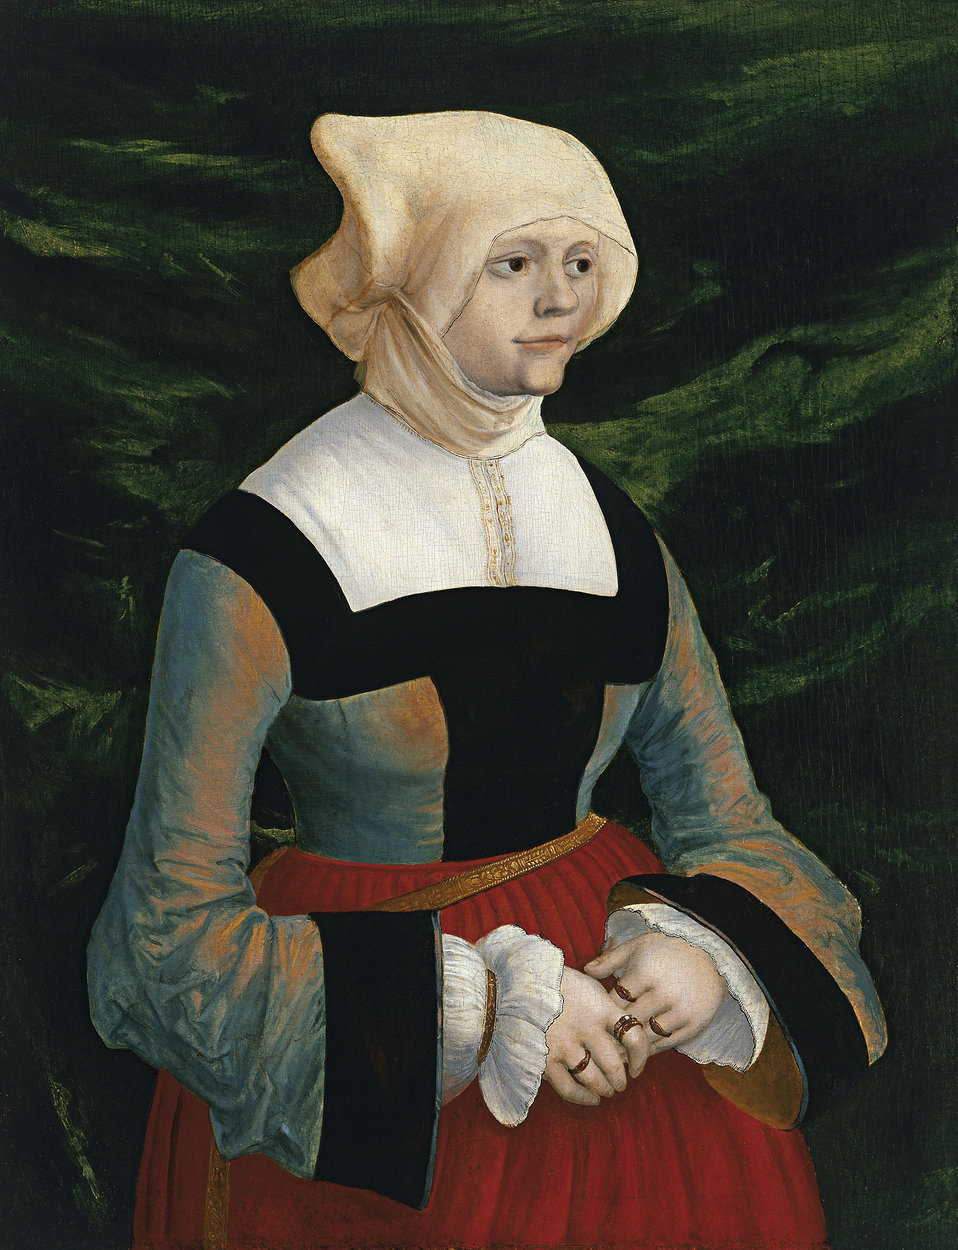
Albrecht Altdorfer - Porträt einer jungen Frau